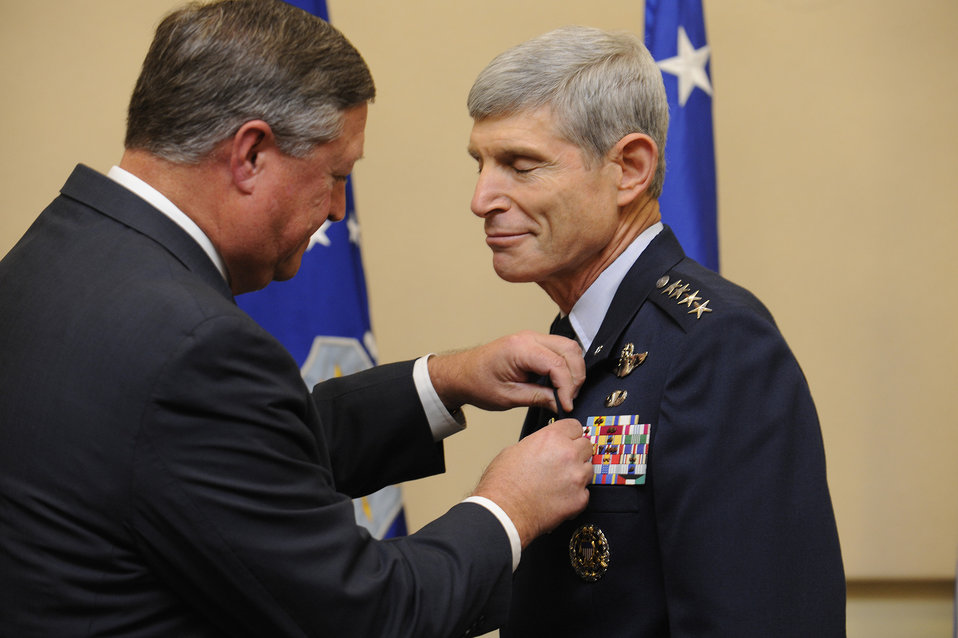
CSAF, spouse recognized for distinguished service

Secretary of the Air Force Michael Donley presents the Distinguished Service Medal to Air Force Chief of Staff Gen. Norton Schwartz in a ceremony at Joint Base Andrews, Md., Aug. 9, 2012.